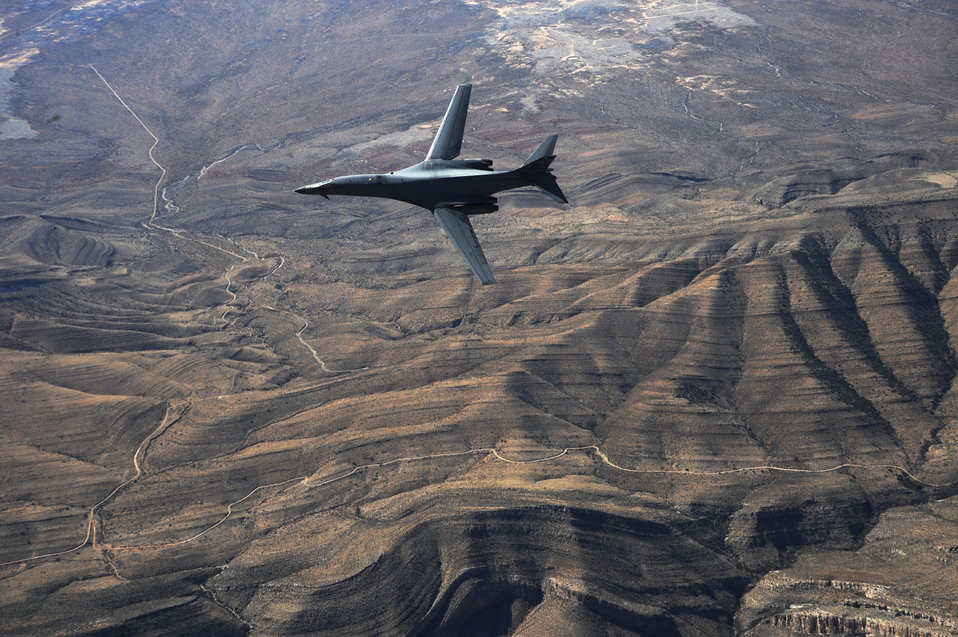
B1-B Training Mission

A B-1B Lancer assigned to the 28th Bomb Squadron, Dyess Air Force Base, Texas, maneuvers over New Mexico during a training mission Feb. 24, 2010. Dyess celebrates the 25th anniversary of the first B-1B bomber arriving at the base.